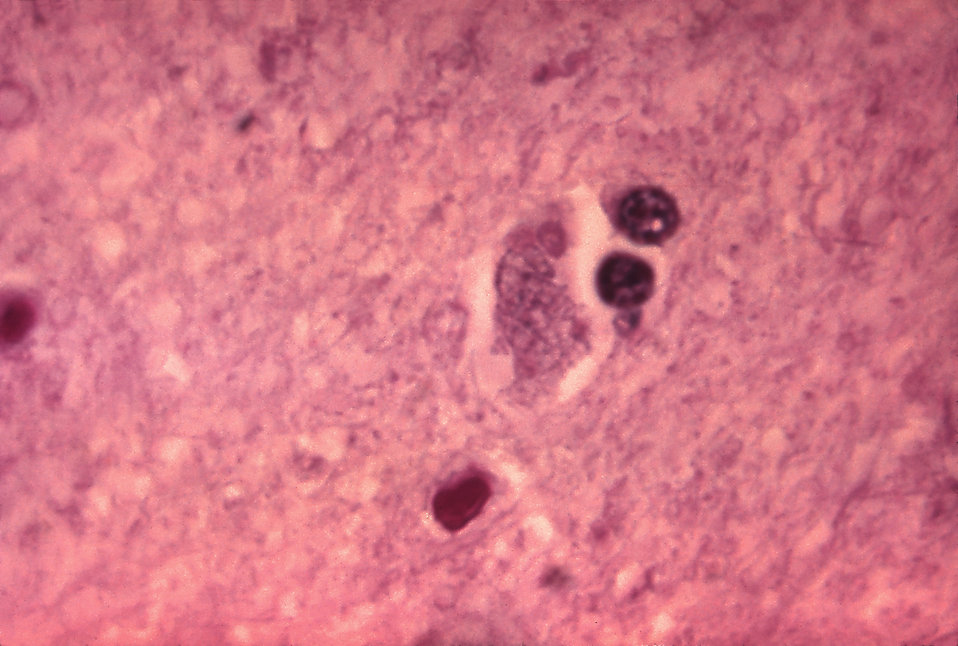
This micrograph, prepared using an H&E stain, depicts the histopathologic changes associated with rabies encephalitis.